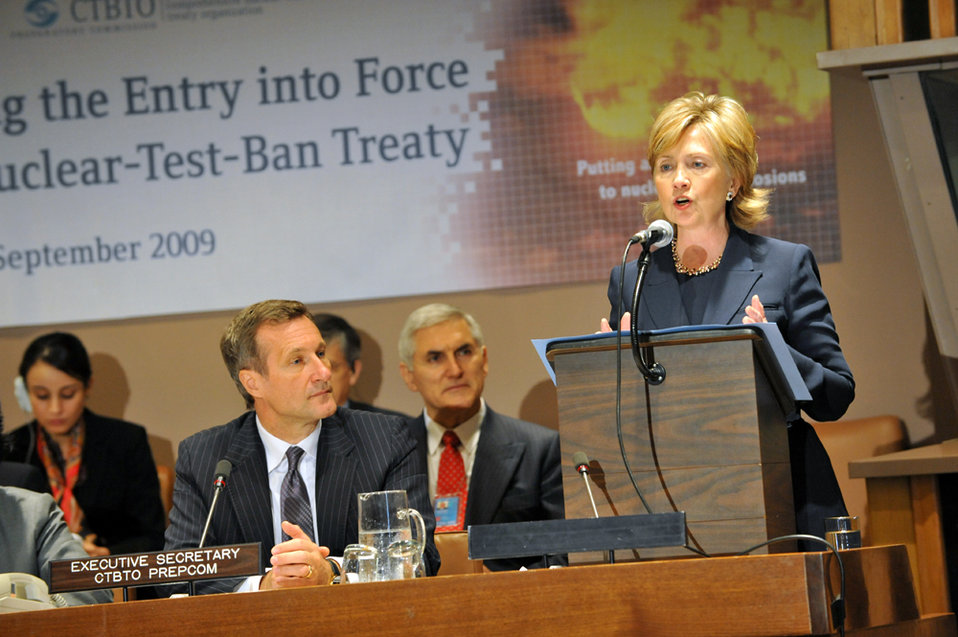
UNGA 2009: Comprehensive Nuclear-Test-Ban Treaty Conference

U.S. Secretary of State Hillary Rodham Clinton delivers remarks at the Comprehensive Nuclear-Test-Ban Treaty (CTBT) Article XIV Conference at the United Nations headquarters during the 64th Session of the UN General Assembly in New York City, New York September 24, 2009.